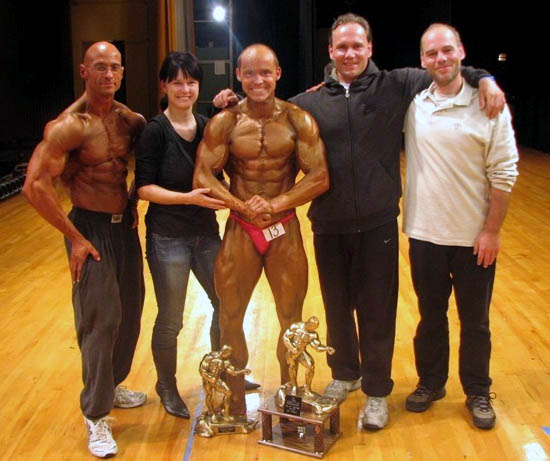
Spangdahlem bodybuilder makes professional debut

Troy Saunders (left) stands with Frank Kaerger (third from left) who won the amateur middleweight class of the International Bodybuilding Federation Championship after the Nov. 10 competition in New York City. Saunders is a master sergeant assigned to the 52nd Logistics Readiness Squadron at Spangdahlem Air Base, Germany.